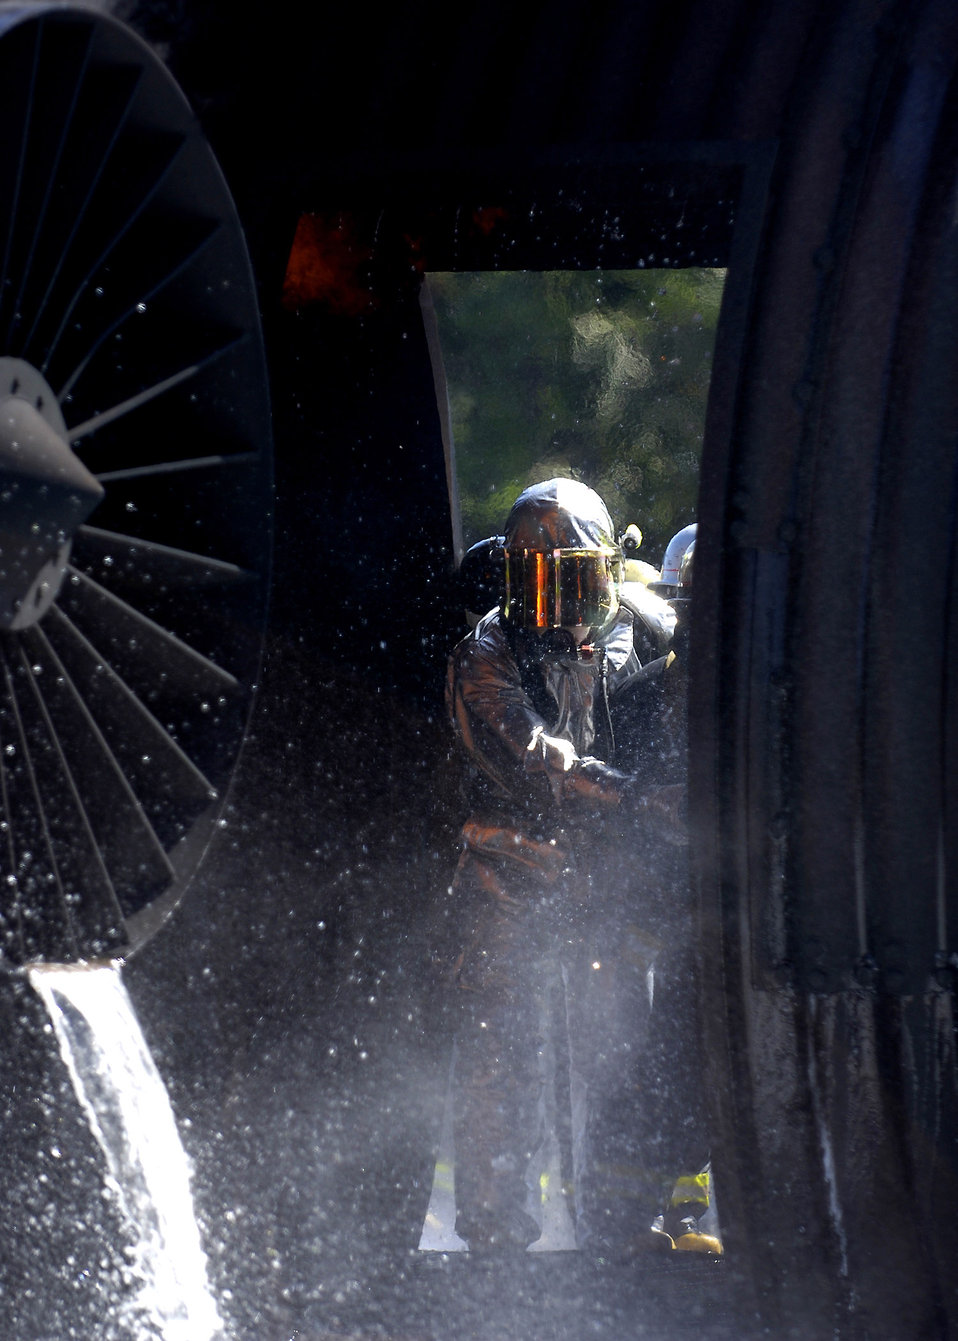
Fightin' fires

Shuji Imota instructs Towad City firefighters inside a burning aircraft during a simulated crash at Misawa Air Base, Japan, Sept. 10. The training was conducted in order to acquaint Towada City fire fighters with Air Force fire fighting procedures. Mr. Imota is a 35th Civil Engineer Squadron firefighter crew chief.